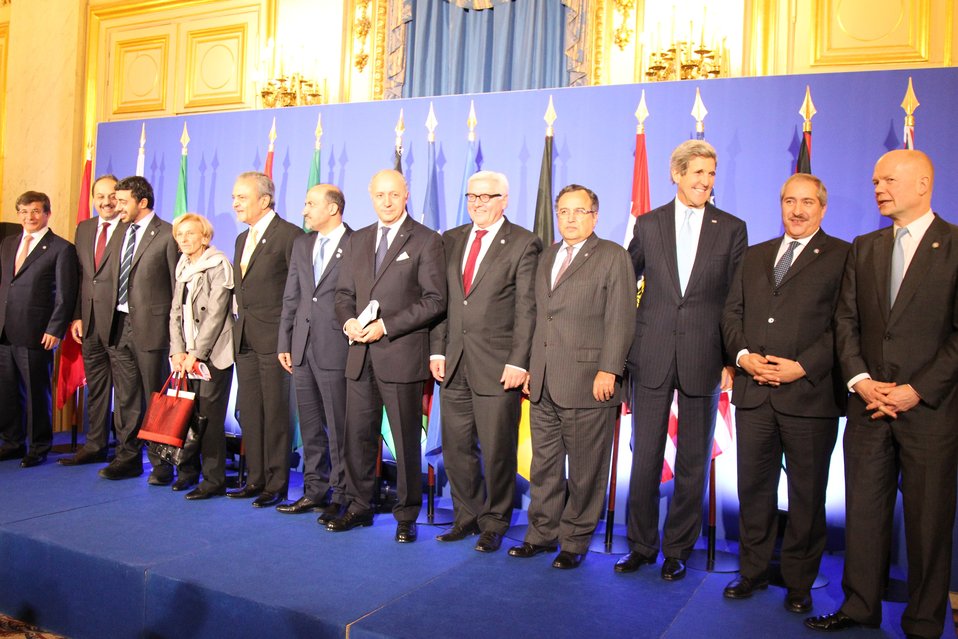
Secretary Kerry Poses for a Picture With Members of the London 11

U.S. Secretary of State John Kerry poses for a picture with other members of the London 11 in Quai d'Orsay, Paris on January 12, 2013.